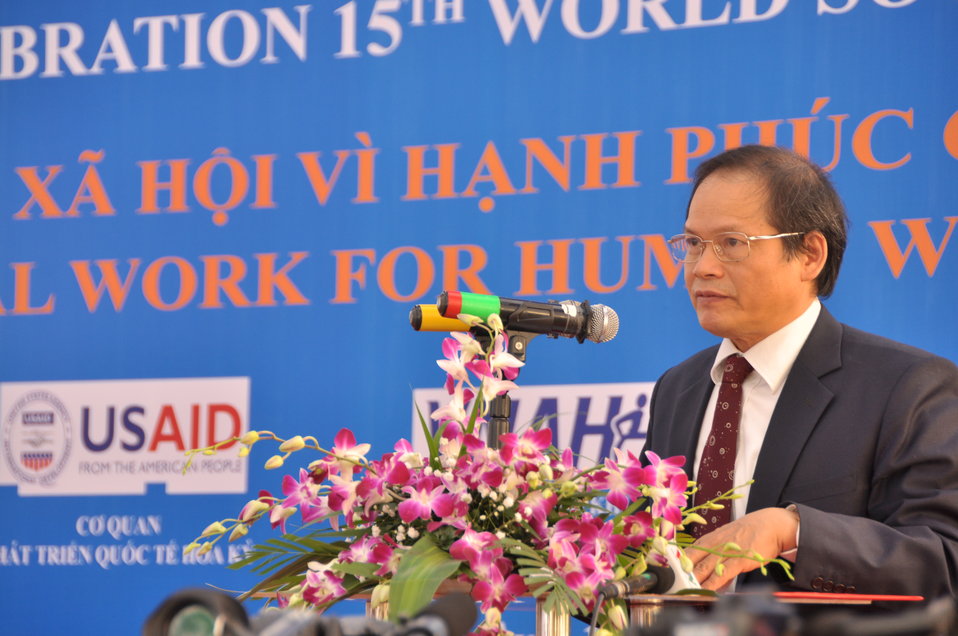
Prof., Dr. Nguyễn Văn Khánh, Rector of University of Social Sciences and Humanities, speaks at the Social Work Day event in Hanoi

Photo: @USAIDVietnam, November 9, 2012